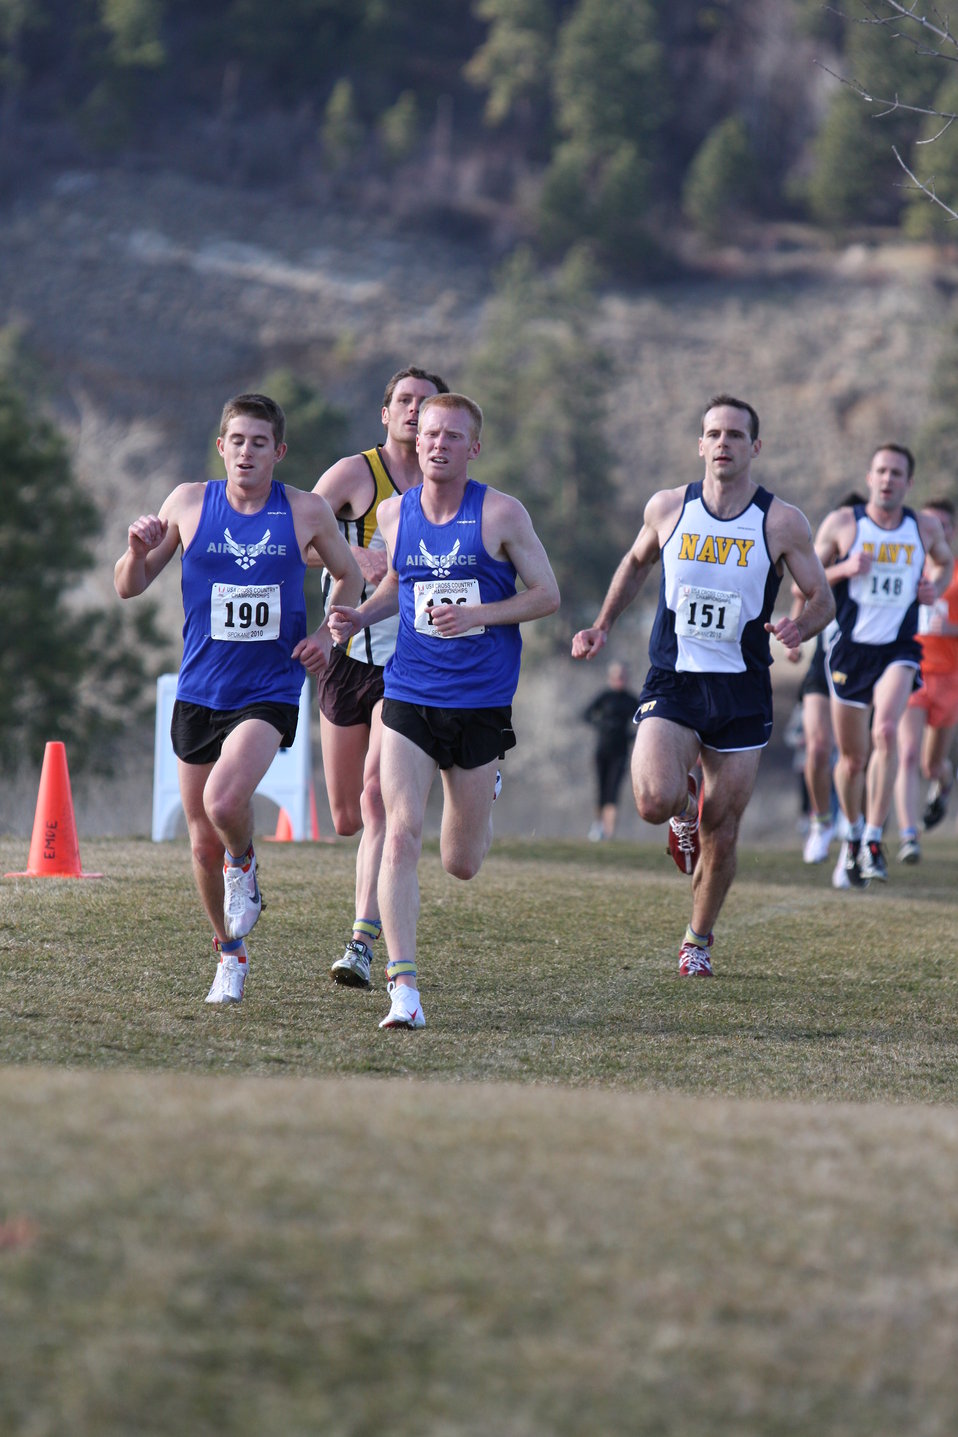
Air Force cross country teams win Armed Forces title

2nd Lt. Matthew Williams (left) finished in third place in the Armed Forces Cross Country Championship Feb. 13, 2010, at Plantes Ferry Sports Complex, Spokane Valley, Wash. He finished with a time of 37:08, a pace of 4:59 minutes per mile. 2nd Lt. Sean Houseworth (right) finished in fifth place with a time of 38:21, a pace of 5:08 minutes per mile. Lieutenant Williams is an Air Force Institute of Technology student at University of Colorado, Boulder, Colo. Lieutenant Houseworth is assigned to Vandenberg Air Force Base, Calif.